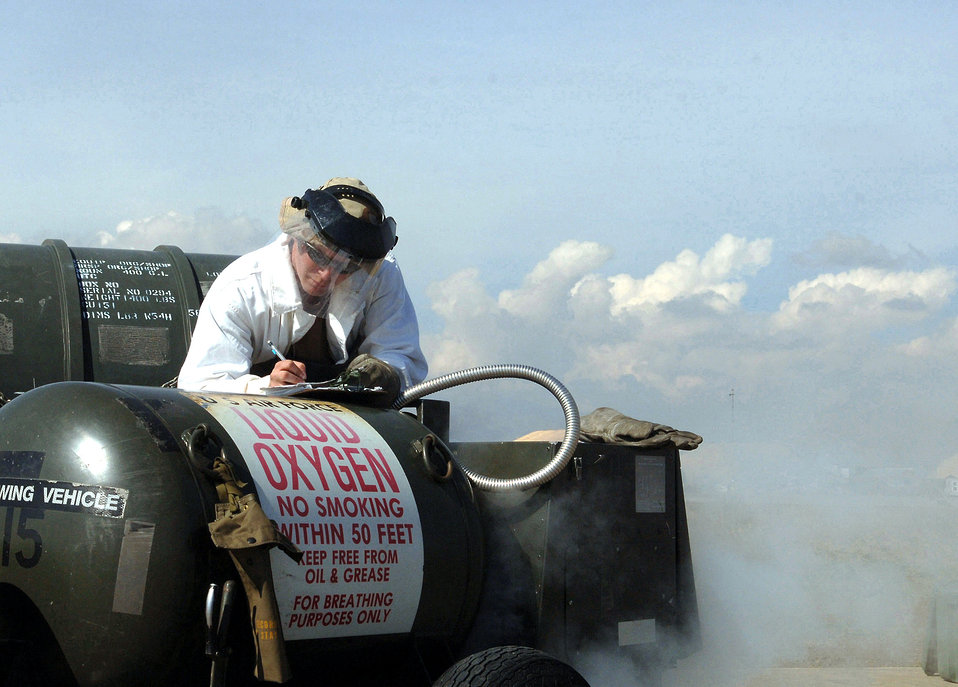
Fueled and ready

Senior Airman Michael Brady fills a 50-gallon liquid oxygen cart while completing cryogenic issue forms at Bagram Air Base, Afghanistan, Saturday, Feb. 18, 2006. Airman Brady is a fuels laboratory technician with the 455th Expeditionary Logistics Readiness Squadron petroleum oil and lubricant element.